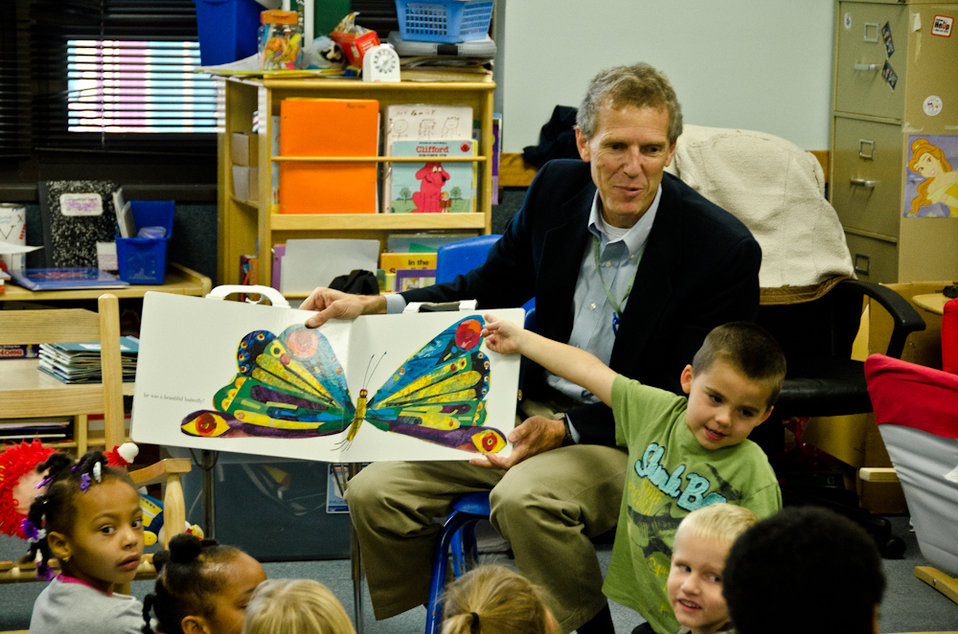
November 16, 2011 'Kansas Reads to Preschoolers Week'

U.S. EPA Regional Administrator Karl Brooks joined over 100 other volunteers to read to preschoolers across the state of Kansas.

More information @ bit.ly/vCUtOW